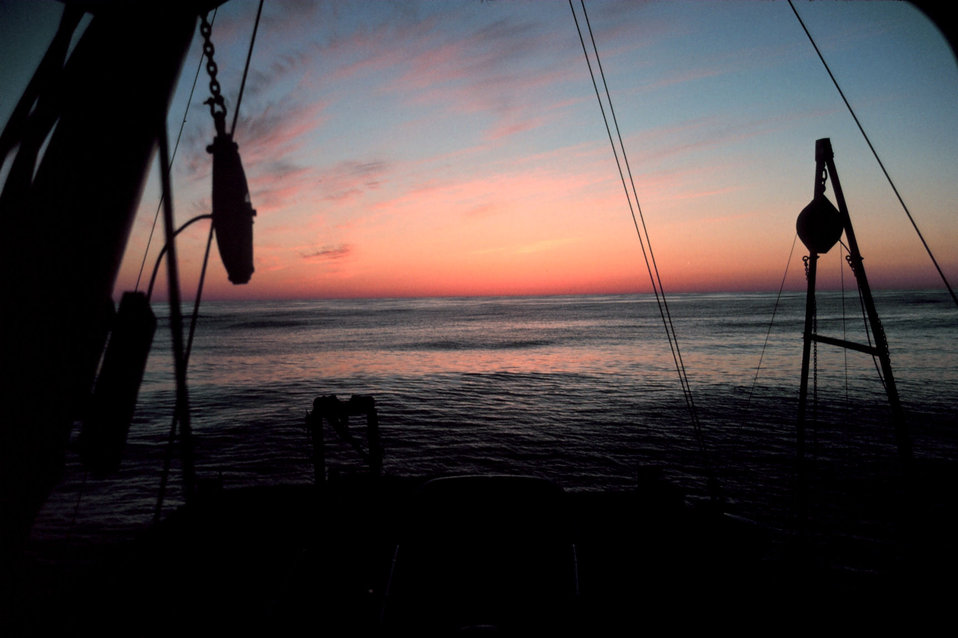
Deck gear and rigging frame the sunset looking over the stern of the NOAA Ship ALBATROSS IV.